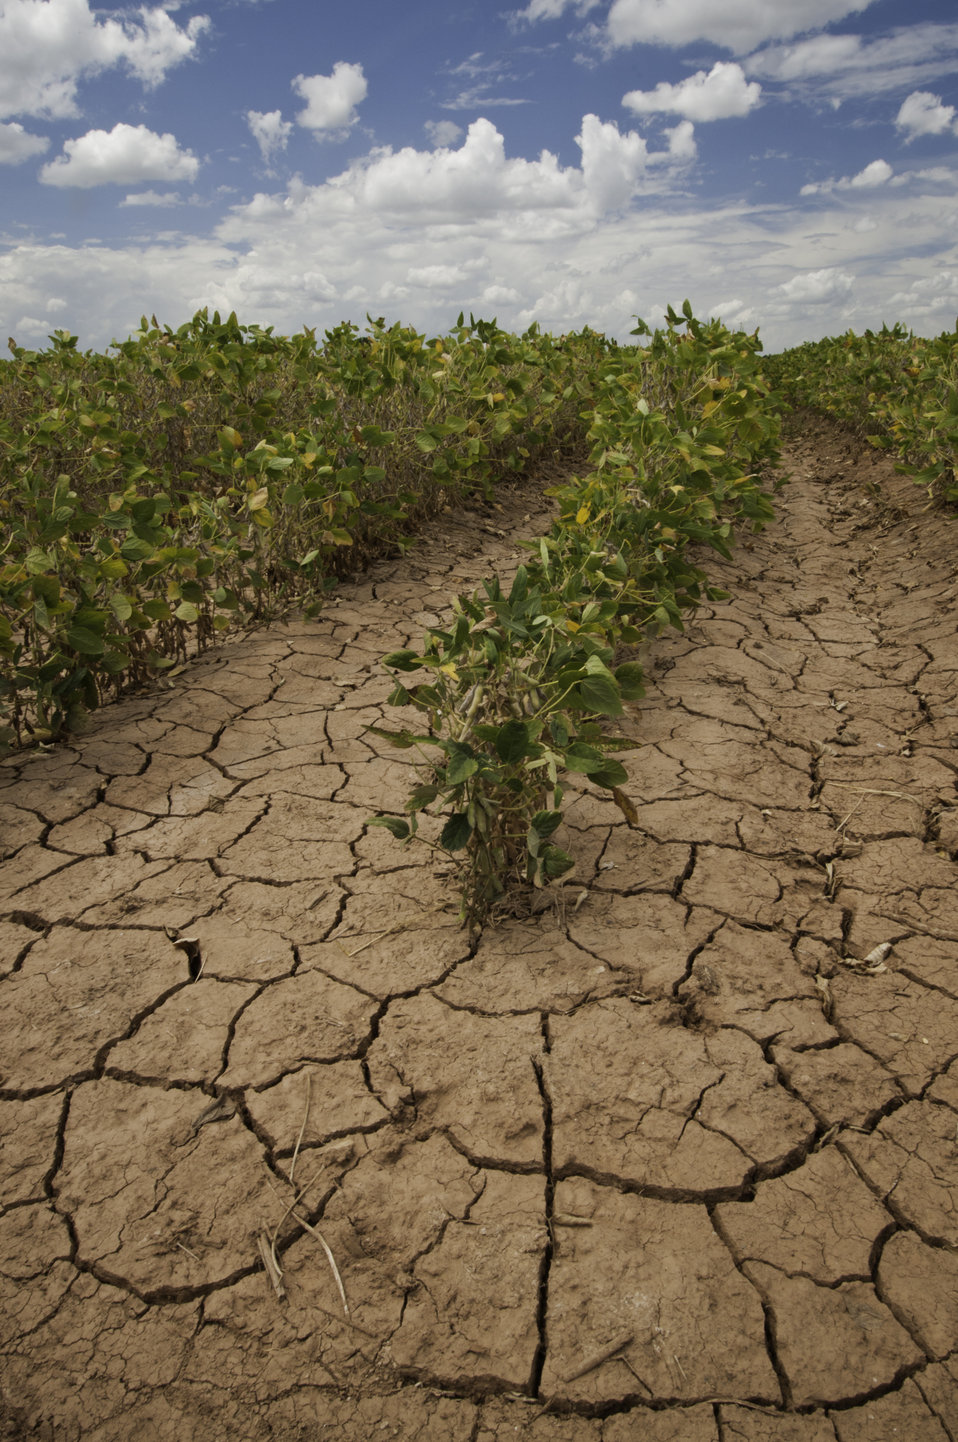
Soybeans show the effect of the drought near Navasota, TX on Aug. 23, 2013.